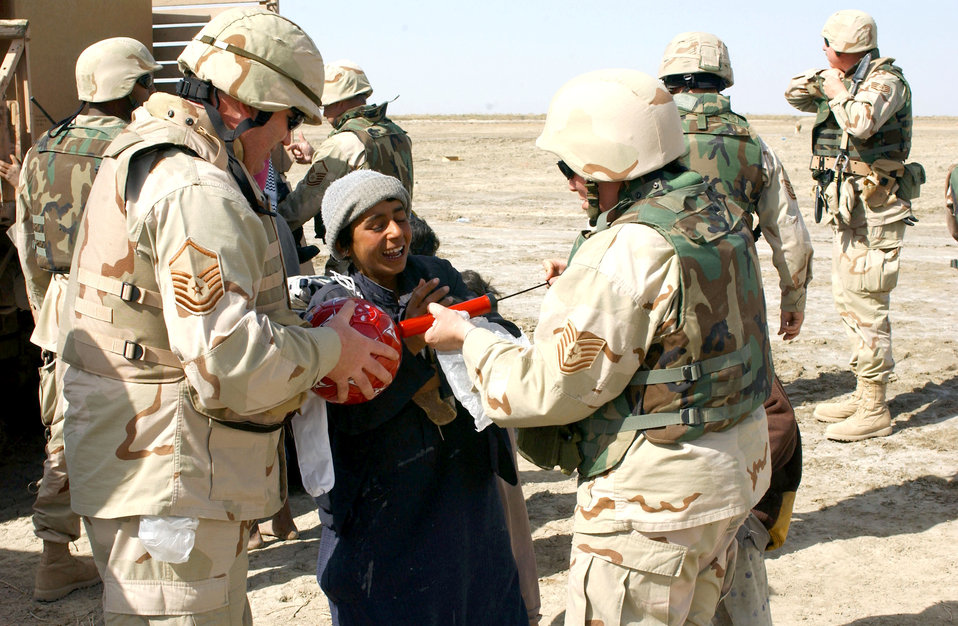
Airmen, Soldiers reach out to local Bedouins

NEAR TALLIL AIR BASE, Iraq -- Master Sgt. Paul Booton (left) and Tech. Sgt. Kimberly Justice help inflate a soccer ball for a child here during a visit to a Bedouin camp as part of an outreach program. The Airmen are assigned to the 407th Expeditionary Logistics Readiness Squadron.